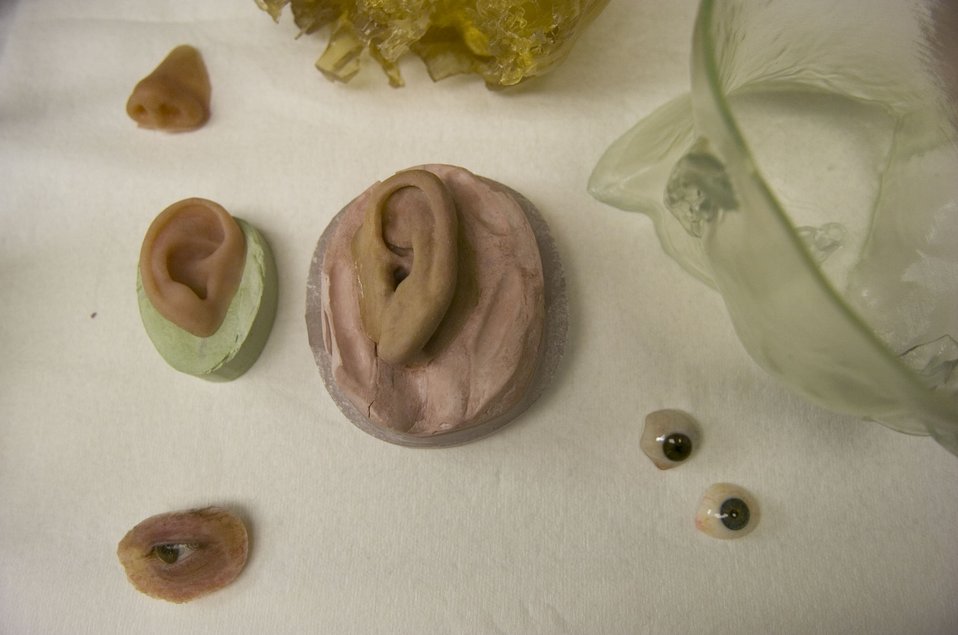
Wounded warrior receives new ears

Maxillofacial prosthodontists from the 59th Medical Wing at Lackland Air Force Base, Texas, create ears, eyes and noses for those who have been injured during duty.